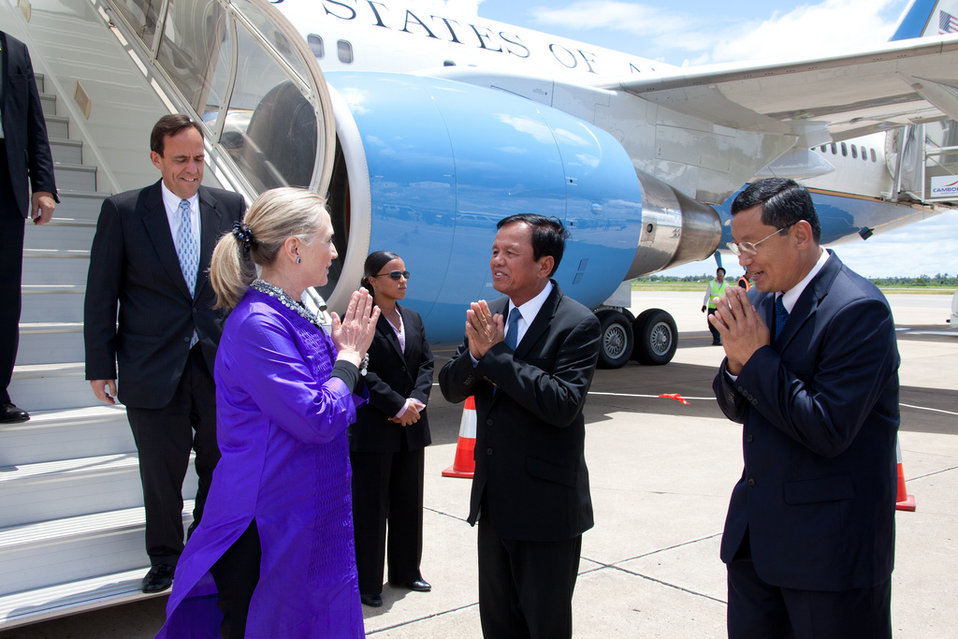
Secretary Clinton Arrives in Siem Reap

U.S. Secretary of State Hillary Rodham Clinton is greeted by locals upon her arrival to Siem Reap, Cambodia, on July 13, 2012.